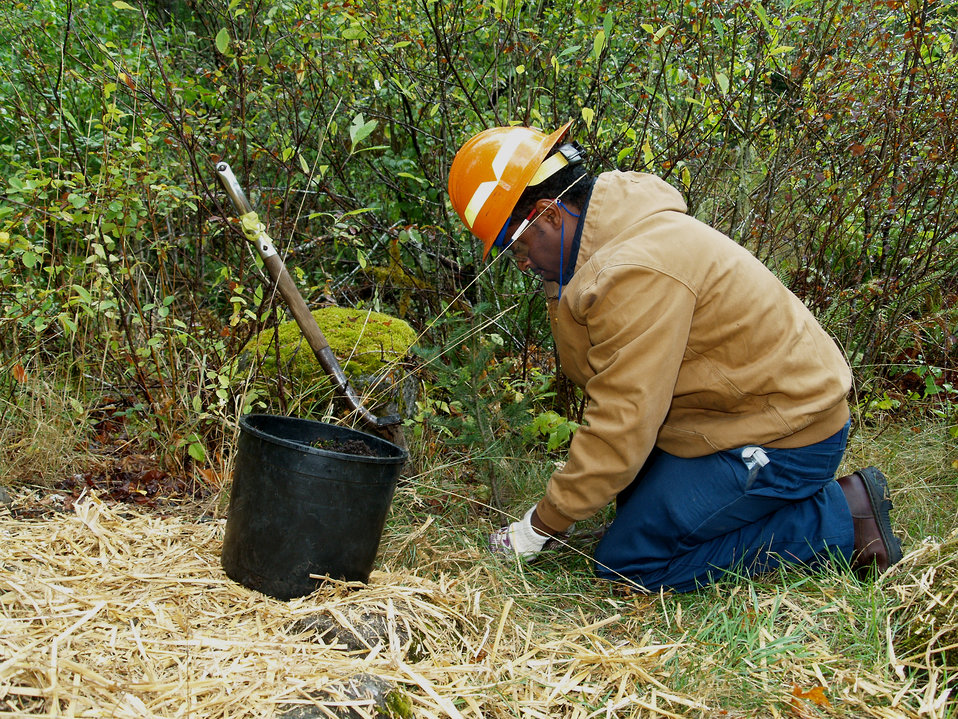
September 29, 2009. Estacada, OR. Timber Lake Job Corps Center student Biniyam Desta plants a seedling during a streamside restoration project on the Clackamas River. The project enhances the spawning areas of native salmon on the river.